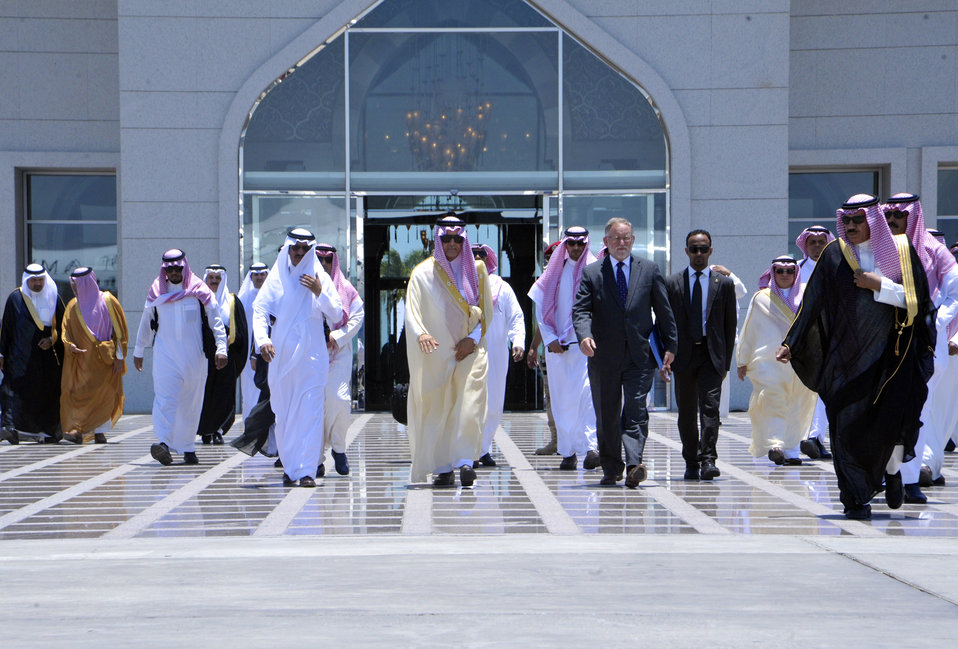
Saudi Foreign Minister al-Faisal and Ambassador Smith Walk to Meet Secretary Kerry

Saudi Foreign Minister Prince Saud al-Faisal, accompanied by U.S. Ambassador to Saudi Arabia James Smith, walks to greet U.S. Secretary of State John Kerry upon his arrival in Jeddah, Saudi Arabia, on June 25, 2013.